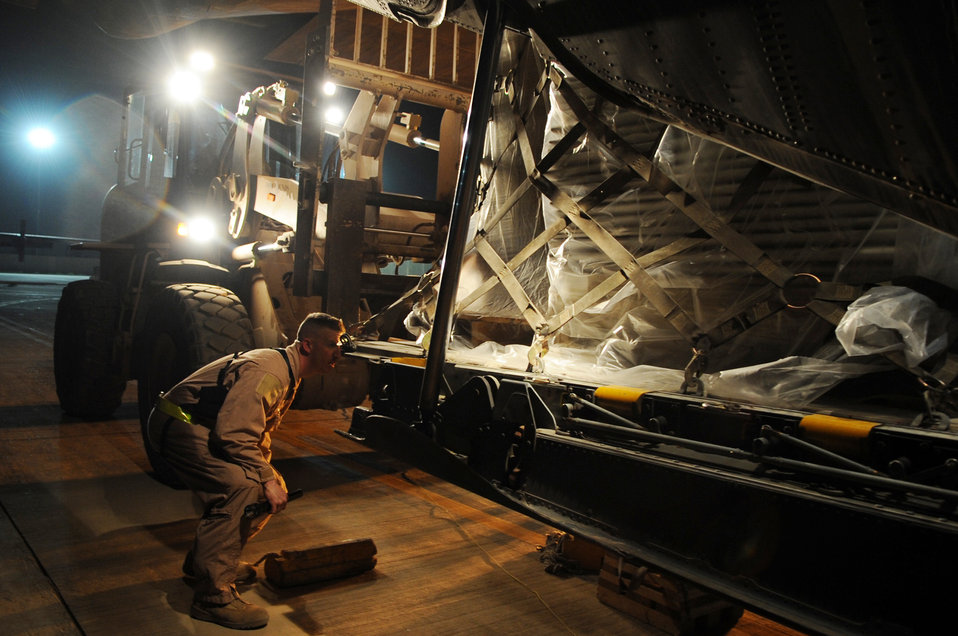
C130E completes last combat mission

A flight engineer assigned to the 777th Expeditionary Aircraft Maintenance Unit helps guide a forklift to place a pallet in a C-130E Hercules prior to its last combat mission March 6, 2010, at Joint Base Balad, Iraq.